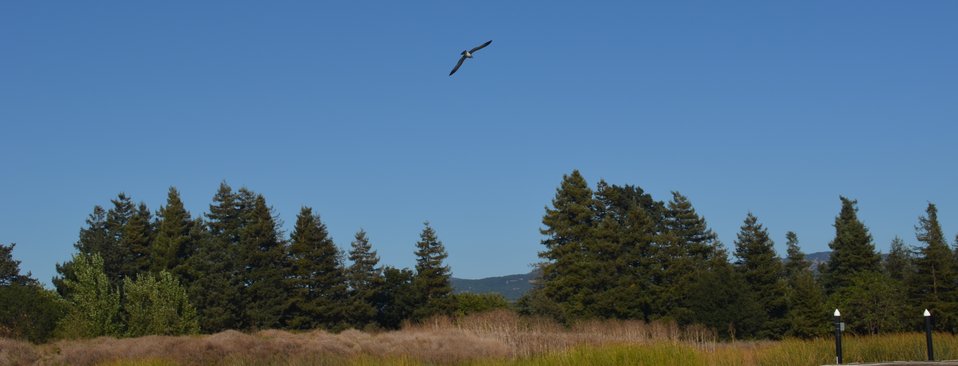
Napa flood risk reduction efforts

Among the many unique features of this project is a beautiful wetlands area. (US Army Corps of Engineers/DeDe Cordell)